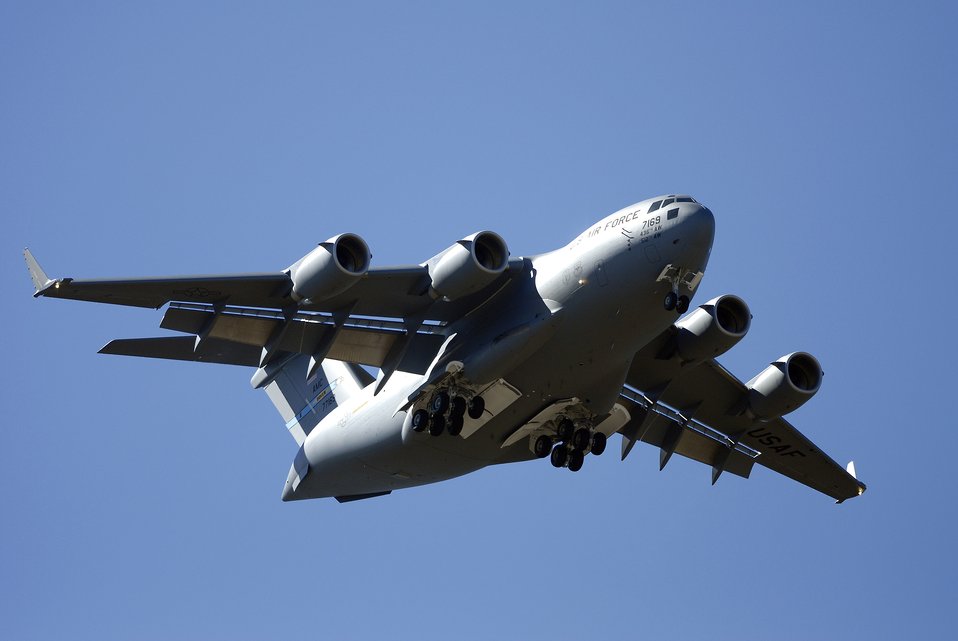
Commandant of cadets flies new C-17 Globemaster III home

Brig. Gen. Susan Y. Desjardins flies a newly accepted C-17 Globemaster III Oct. 2 over the U.S. Air Force Academy cadet area in Colorado Springs, Colo. General Desjardins accepted the aircraft into the Air Force's inventory at Boeing's facilities in Long Beach, Calif., and flew it from the Boeing facility to its new duty station with the 436th Airlift Wing at Dover Air Force Base, Del. The general, a command pilot with more than 3,800 flying hours in the C-17 and other aircraft, is the Air Force Academy commandant of cadets.